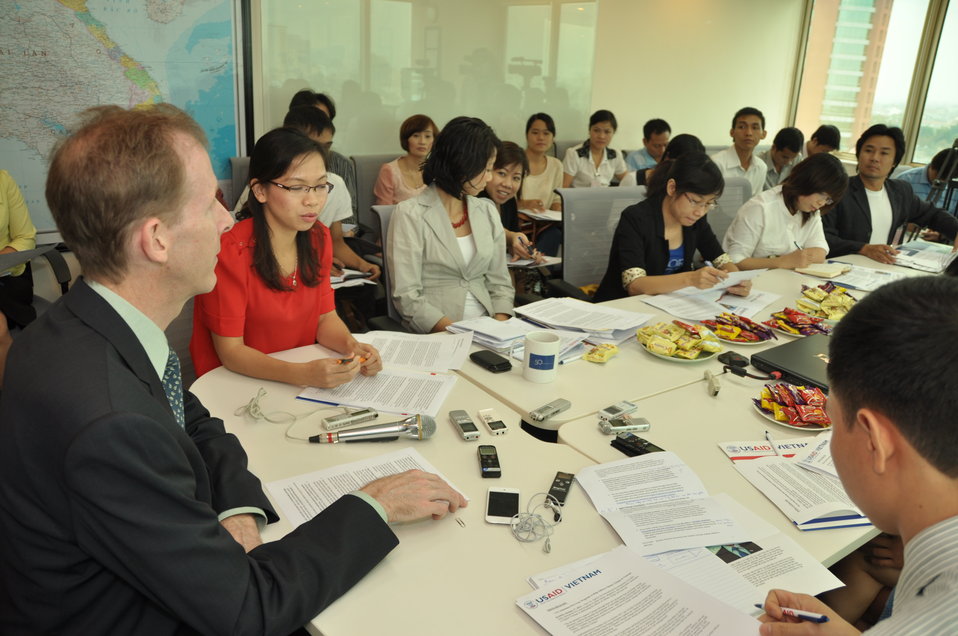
USAID Mission Director Joakim Parker announces climate change awards

October 17, 2012